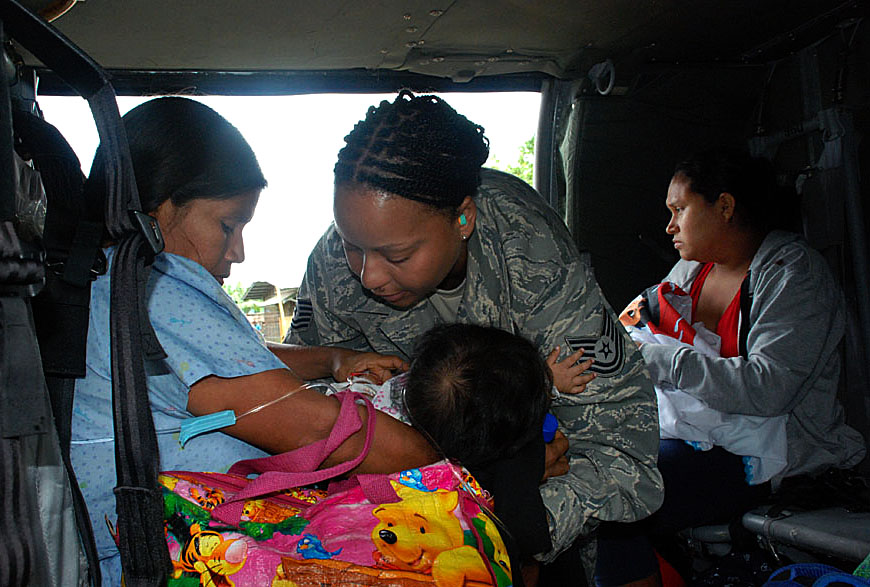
Help is here!

Tech. Sgt. Tracy Fletcher, a Joint Task Force-Bravo emergency medical technician, secures a mother and her 7-month-old baby in the seat of a Army UH-60 Black Hawk helicopter Nov. 27 near Las Tablas, Panama. They and others were being evacuated to safety and to get medical treatment after flooding in the village.